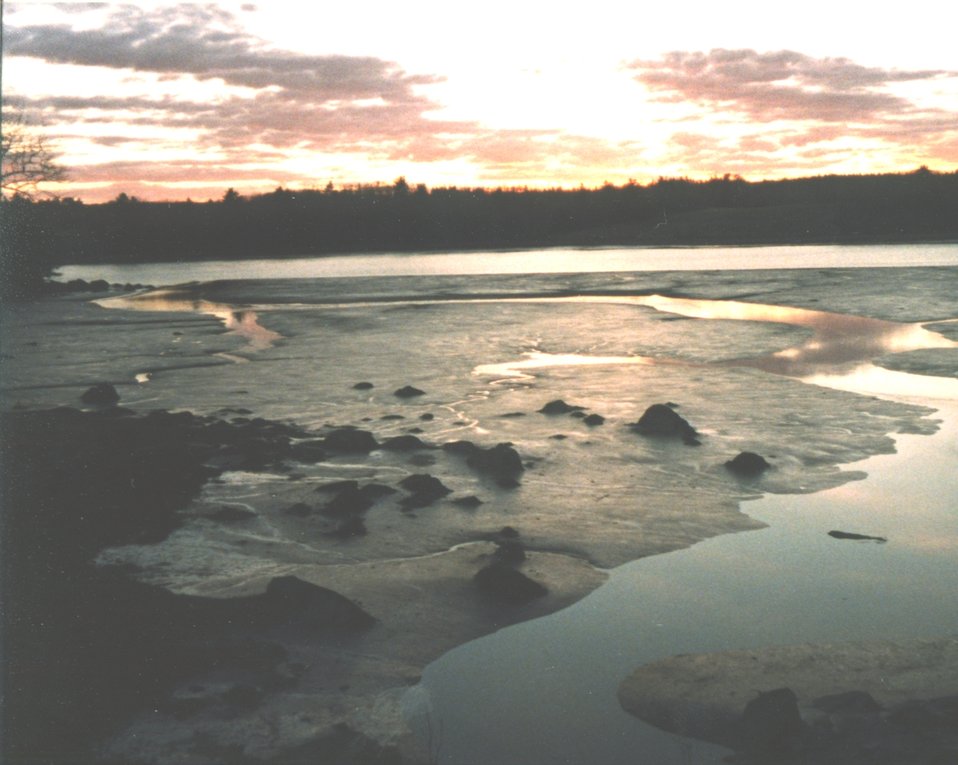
Penobscot River mudflat at low tide showing pattern of tidal streams.